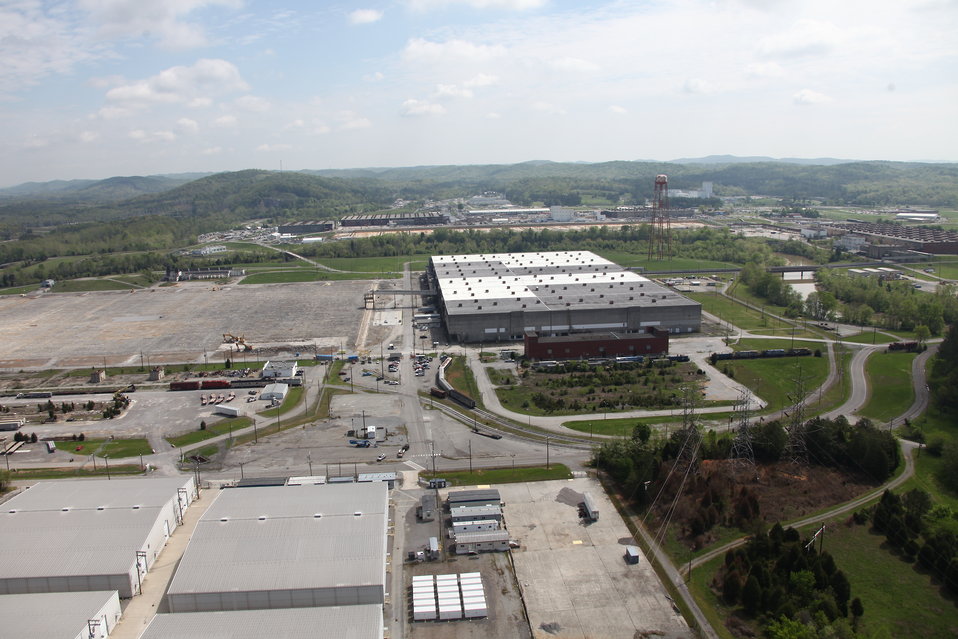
ETTP